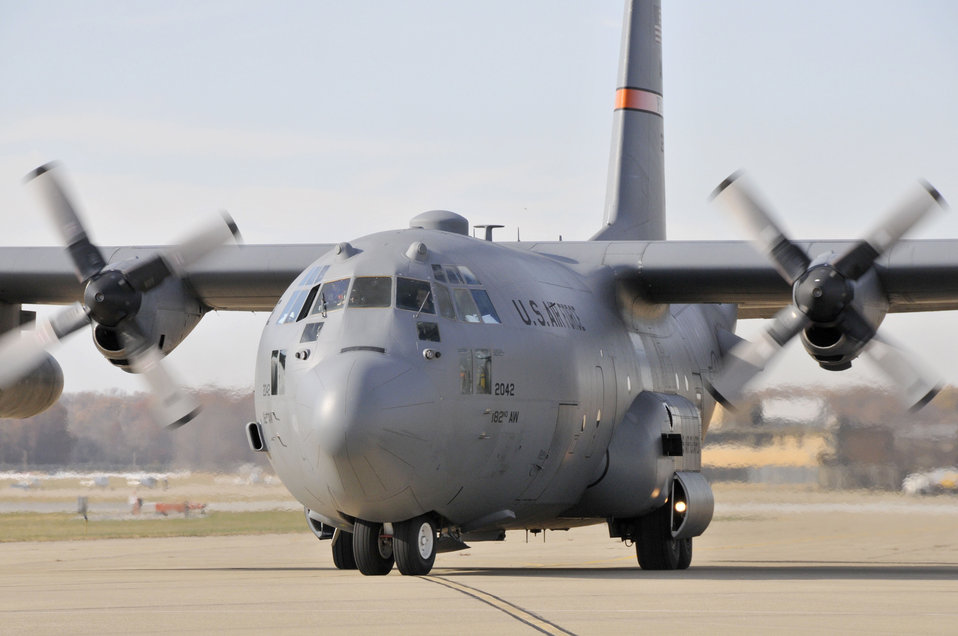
Guardsmen come home

A C-130 Hercules taxis onto to a ramp with security forces members from the the Indiana Air National Guard's 181st Intelligence Wing at Hulman Field Air National Guard Base, Nov 10, 2010. The C-130 is from the 169th Airlift Squadron in Peoria, Ill.